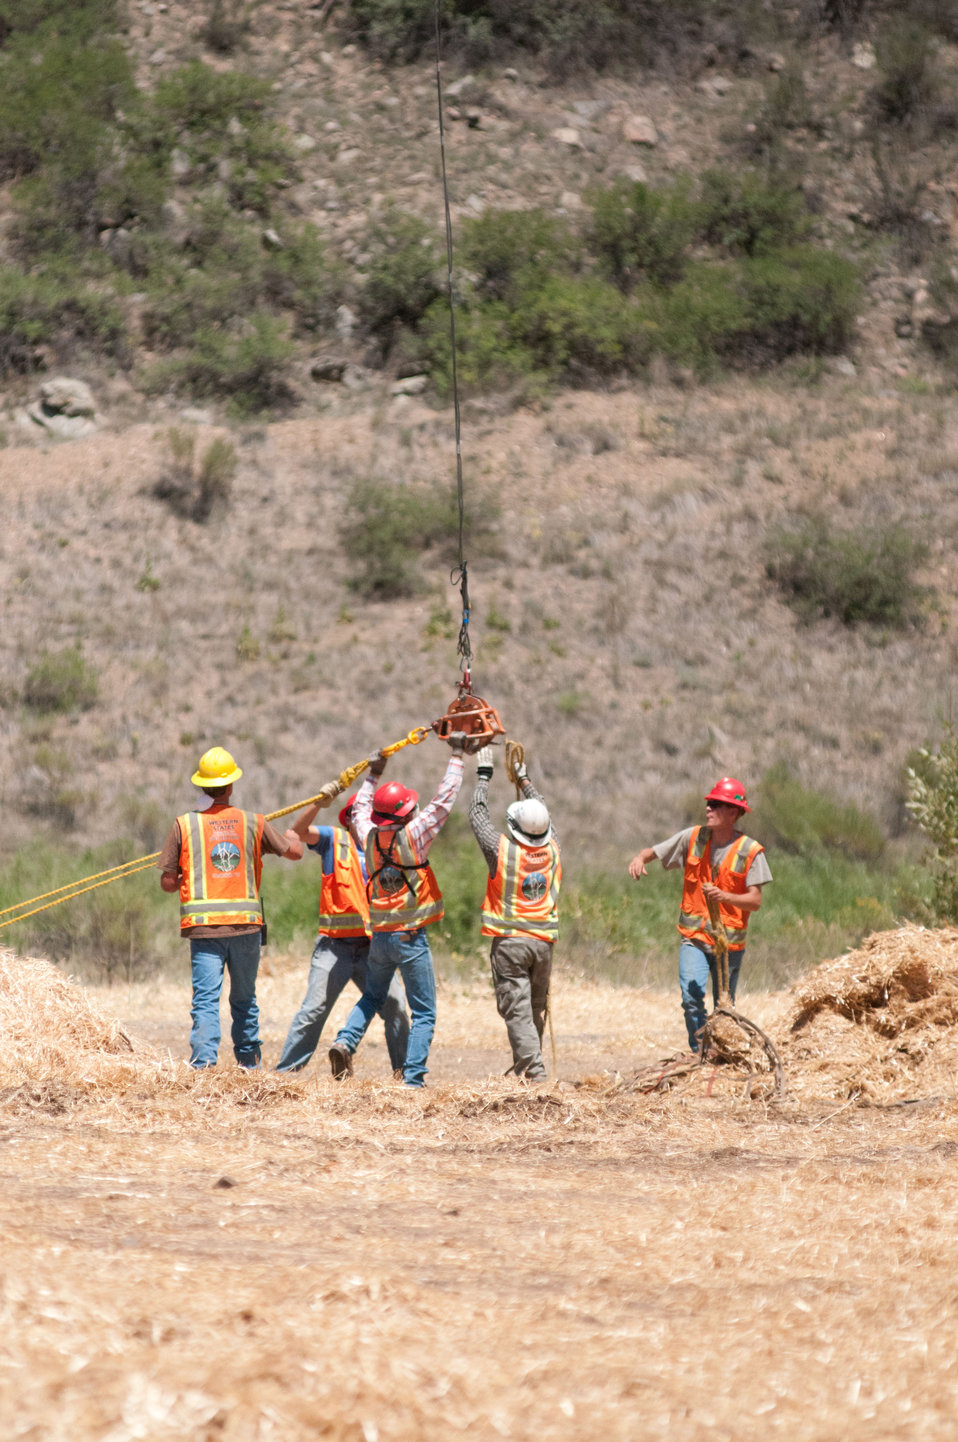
Load crews attach 100-150 foot ropes of a cargo net to a release mechanism hanging under a helicopter during the continuing aerial application of straw to mitigate soil and ash runoff from the mountainous terrain leading to Seaman Reservoir, drinking water resource for the City of Greeley, on Friday, July 20, 2012. Bell UH-1H (2-blade rotor) and A-Star Model B (3-blade rotor) aircraft were launched from a landing zone at the foot of the reservoir spillway. Pilots Randy Mason and Terry Richards in the Bell 204 and Tim Booth in the A-Star use their keen depth perception and piloting skills to keep their straw loads at the end of 100-150-foot cable above the trees and hilltops as they transport and release loads of certified straw weighing 1,400 – 2,000 pounds. 4-person load crews and heavy equipment operators with hydraulic hay fork grapple attachments make easy work of unloading 1,000 pound straw bales from tractor trailer rigs, stack them near the pickup point, then bring the bales onto cargo nets, open then loosen and adjust the load weight on the cargo nets for helicopters to lift and drop them onto barren, burned out tributary lands. Forest service lands received straw, while private and other lands receive a seed mix and straw to promote ground cover plant growth on ash-covered lands. In total, 1,800 tons of straw will be applied during the 14-day operation. One quarter of the cost was paid by the City of Greeley and the U.S. Department of Agriculture funded the remainder. The Hewlett Gulch Fire was started by a camper’s alcohol stove, on May 14, at the saddle of a picturesque mountain ridge along the Hewlett Gulch Trail of Poudre Canyon, in the Roosevelt National Forest, 60 miles north of Denver. At it’s more than 400 firefighters were battling fires being pushed by 50 mph winds that helped blacken over 12-square-miles of dry ground cover, brush and trees. Many of the trees were already dead and tinder dry from beetle-kill. The water in the reservoir remains clean and clear, while downstream water flow has gone from famous Colorado clear water to nearly black flows of water heavily laden with ash, silt, and burnt debris that recent thunderstorms have already washed down from the mountainsides.